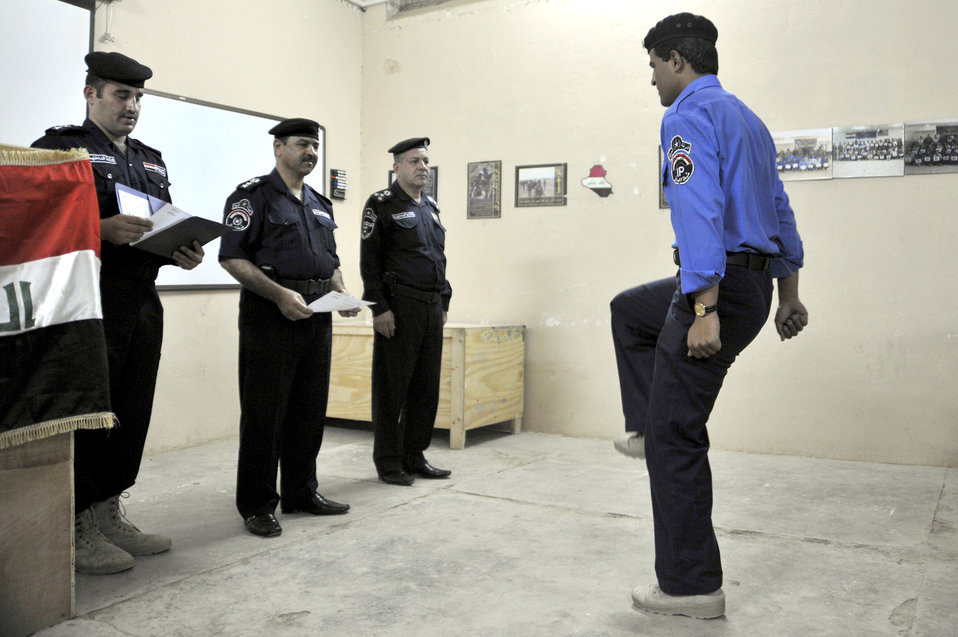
Taji Law Enforcement Academy

An Iraqi police academy graduate from the Taji Law Enforcement Academy marches up to receive his certificate June 3, 2010, at Camp Taji, Iraq. The academy students were instructed on subjects such as evidence gathering, crime scene sketching, finger printing and securing a building.